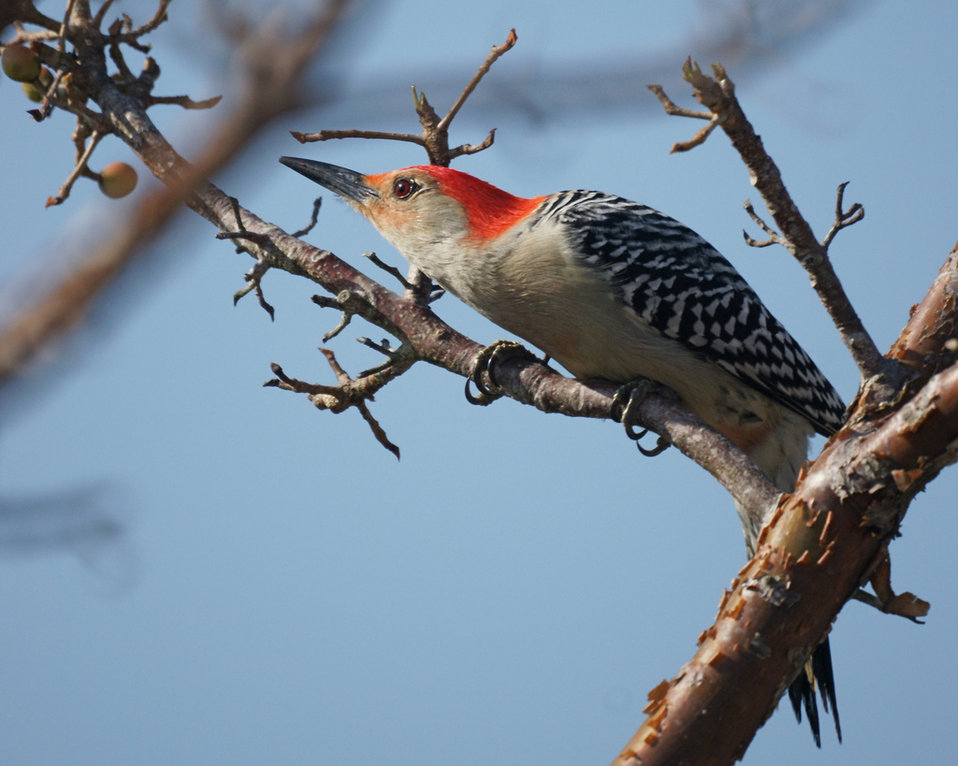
red bellied woodpecker

J.N. Ding Darling National Wildlife Refuge, FL